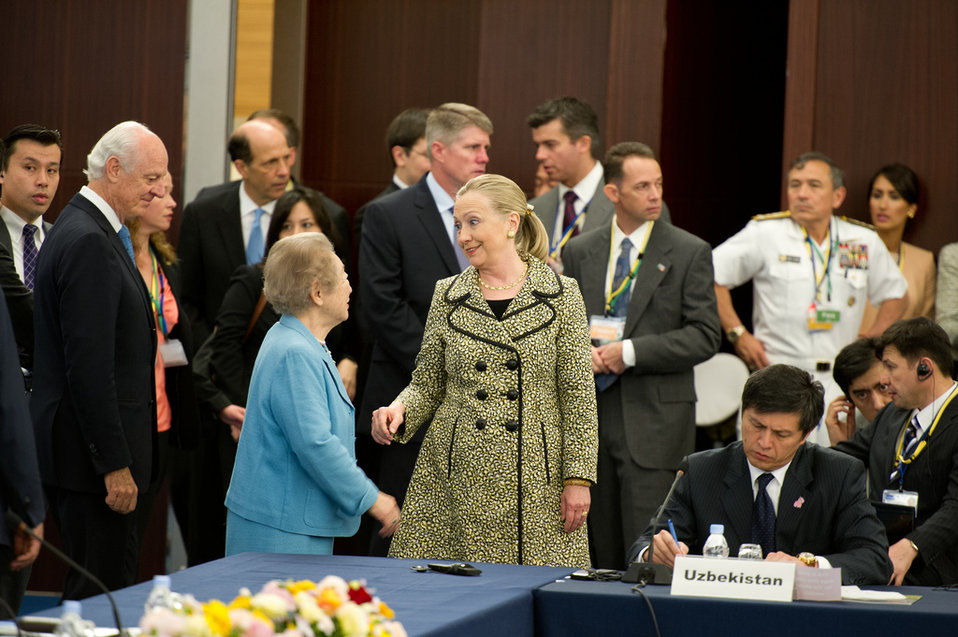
Secretary Clinton Is Greeted By Former UN High Commissioner for Refugees Ogata

U.S. Secretary of State Hillary Rodham Clinton is greeted by former United Nations High Commissioner for Refugees Sadako Ogata at the Tokyo Conference on Afghanistan in Tokyo, Japan, on July 8, 2012.